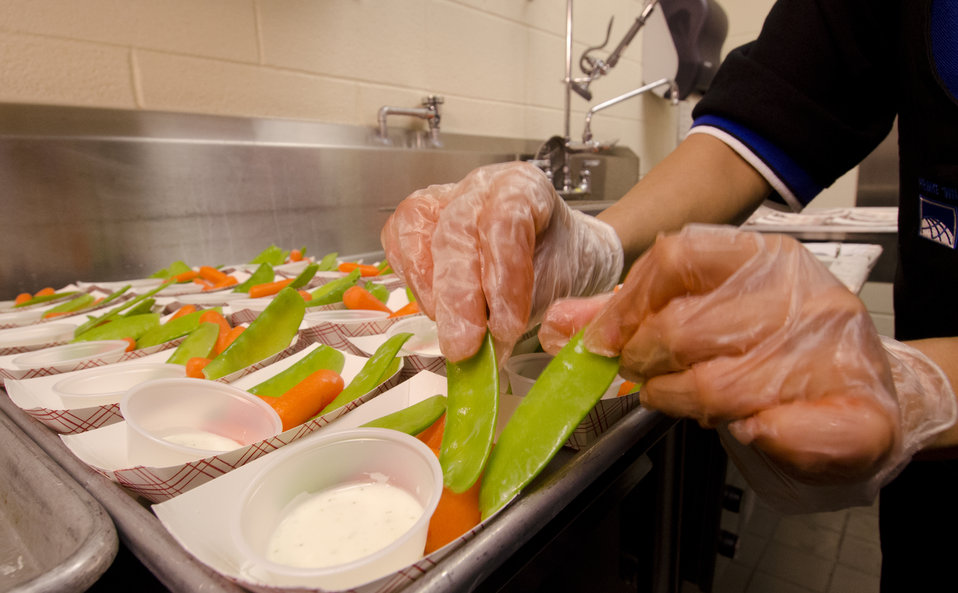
School lunch staff and students enjoy the new school lunch menu created to meet the new standards at the Yorkshire Elementary School in Manassas, VA on Friday, Sept. 7, 2012.